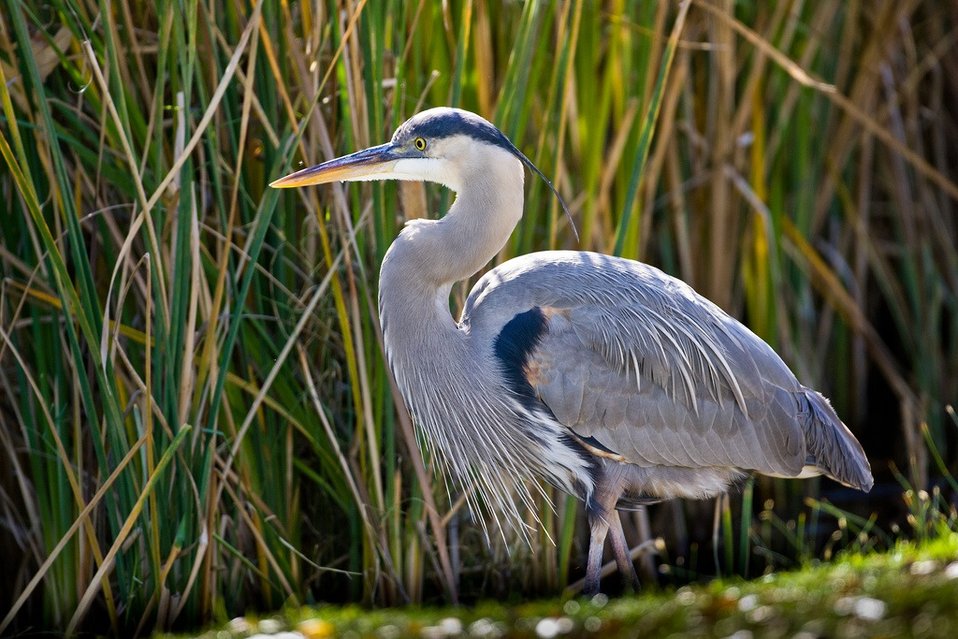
great blue heron in the marsh

Tijuana Slough National Wildlife Refuge, CA